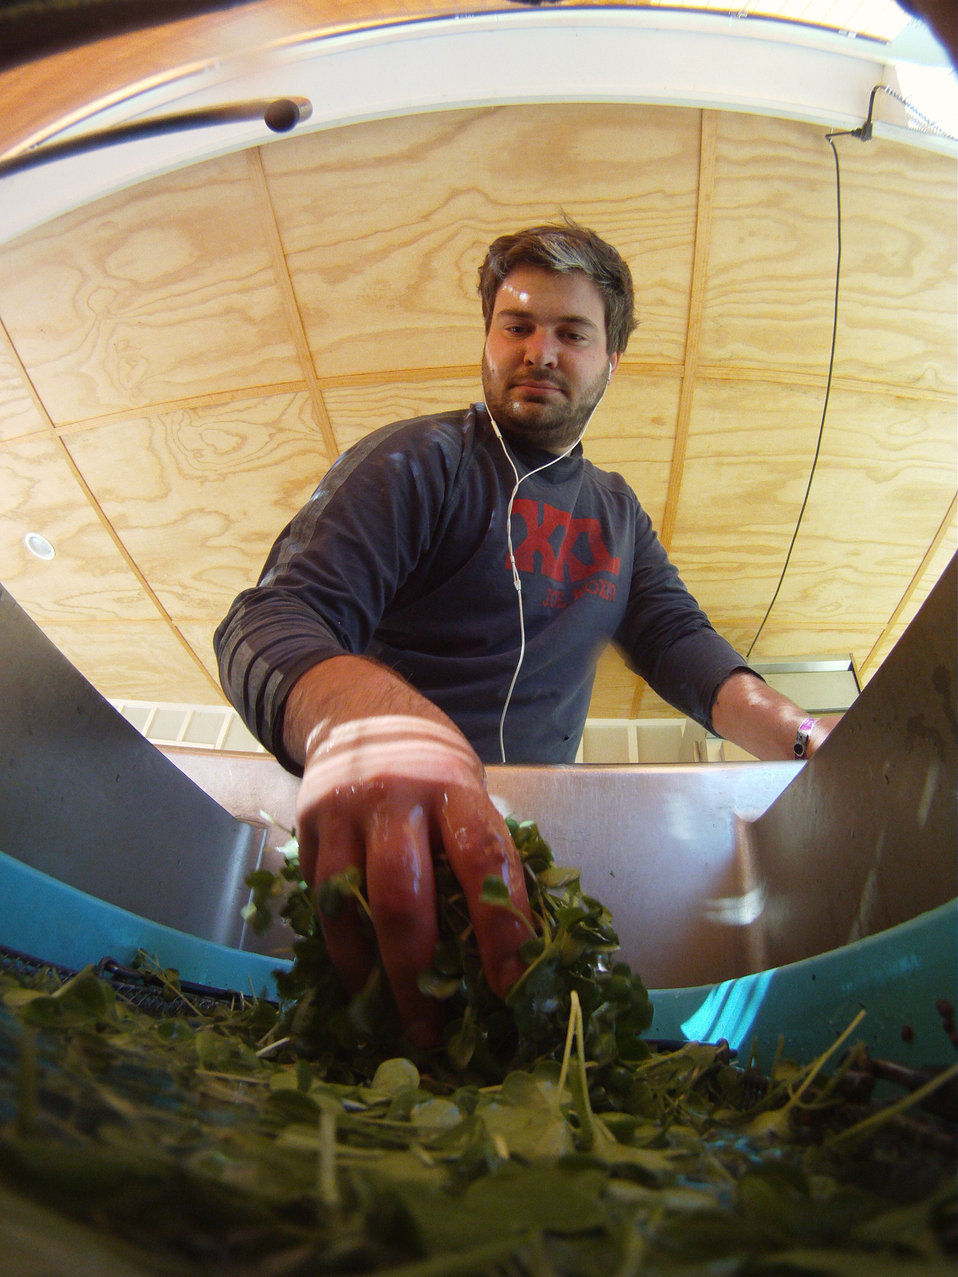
Christopher Douherty looks for any sunflower sprouts with blemishes, while he hand-washes them at Manakintowne Specialty Growers, a 21-acre farm in Powhatan County, Virginia, on Friday, May 6, 2011. Jo Pendergraph and her family and team raise specialty produce for chefs and markets of Richmond, Charlottesville and Williamsburg, VA area. This includes the online food hub of Lulus Local Food served by the Fall Line Farms cooperative. This is one of the farms that chefs get those seemingly unique greens such as French Sorrel, Pea Shoots, Frisee, Tat soi, Mizuna, Pink/green radish shoots, Sunflower shoots, Baby red mustard, Tuscan Kale, Beet greens. All harvested by hand and scissors. As well as micro greens such as Pak choi, Tat soi, Mizuna, Purple kohlrabi, Shungiku (edible chrysanthemum), Ruby chard, Purple/Daikon/Triton radish, Red amaranth and Bull's Blood Beet. Edible flowers such as African Blue Basil, Nasturtiums, Johnny Jump Ups, and Chive blossoms Dianthus (pinks) are grown here. The seasonal choices are listed by suppliers and ordered by members on Lulus Local Food website, the food is distributed to pick-up points in the Richmond, VA area. They also offer a wide variety of household food staples and specialty fruits, vegetables, meats, soaps, eggs, cheeses, flowers, honey, pastas, sauces, syrups, baked goods, mushrooms, flour and grains from and for the Richmond. VA area.